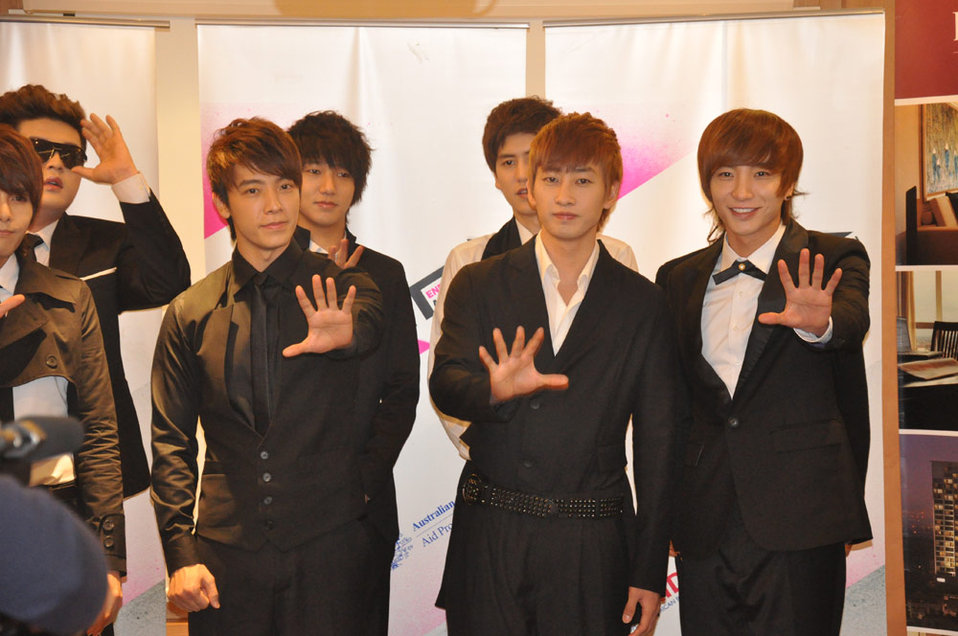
MTV EXIT Hanoi concert March 27, 2010

Super Junior gets ready to perform in Hanoi.